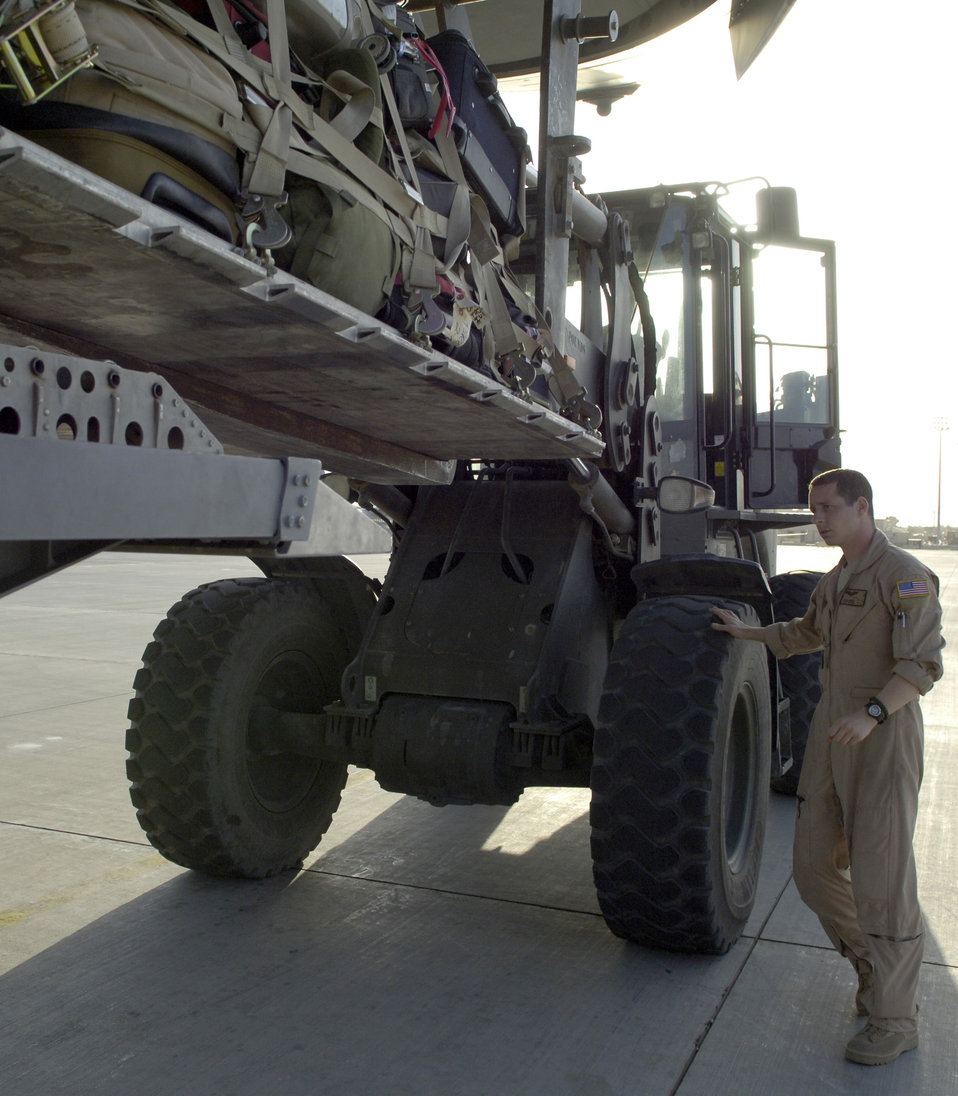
Loading a C-17

Staff Sgt. Robert Kellen prepares to load a pallet onto a C-17 Globemaster III June 13, 2011, at Bagram Airfield, Afghanistan. Sergeant Kellen is assigned to the 455th Expeditionary Aerial Port Squadron.